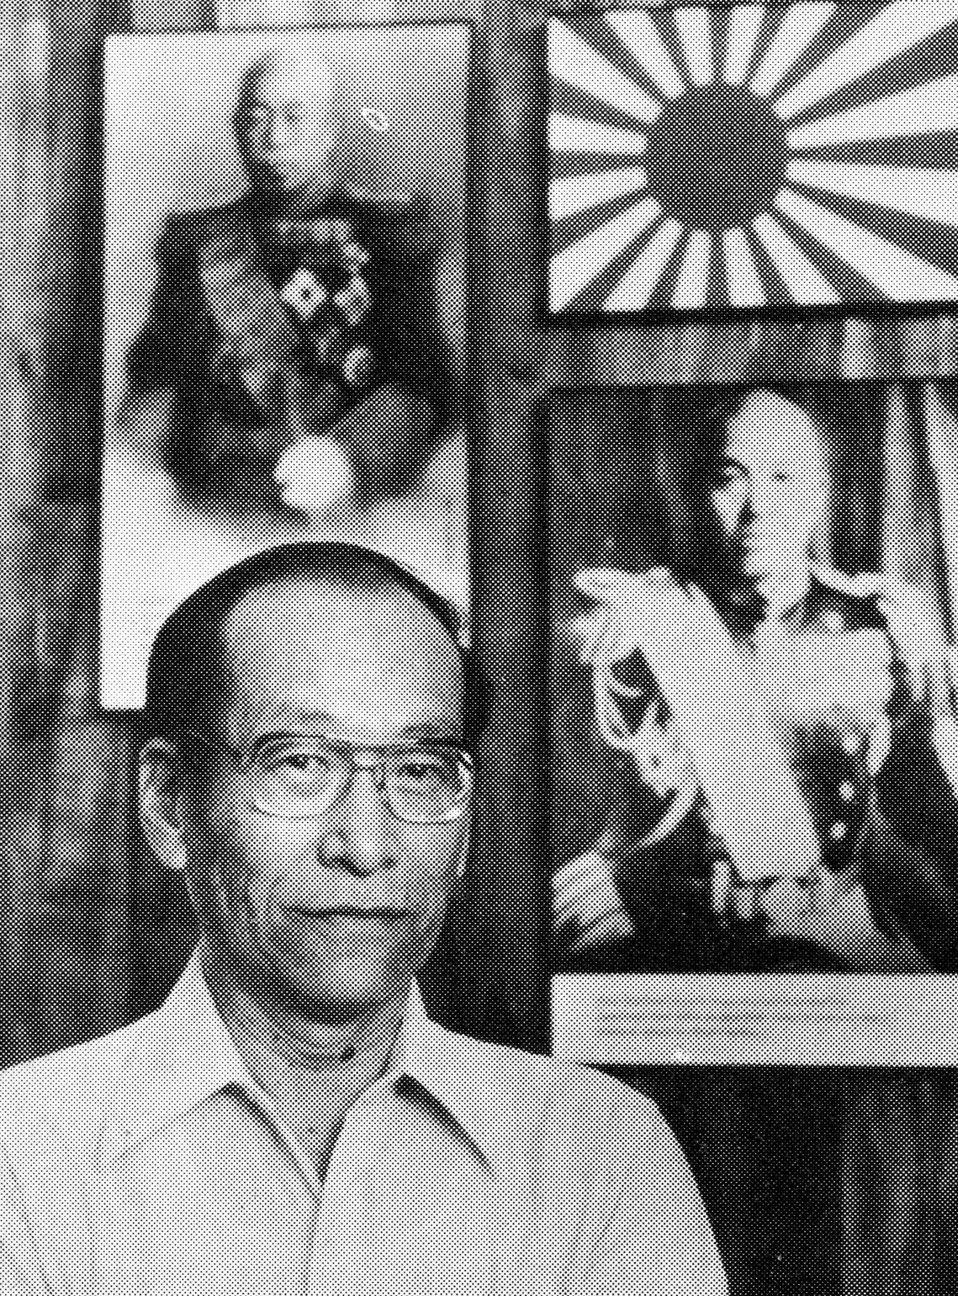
Superior Private, Joe Muratsuchi

Joe Muratsuchi, an American inducted into the Japanese army, stands beneath a display of the Japanese naval flag and World War II leaders, Admiral Yamamoto (left) and Admiral Nagumo, at the Arizona War Memorial Musuem in Hawaii in 1987.